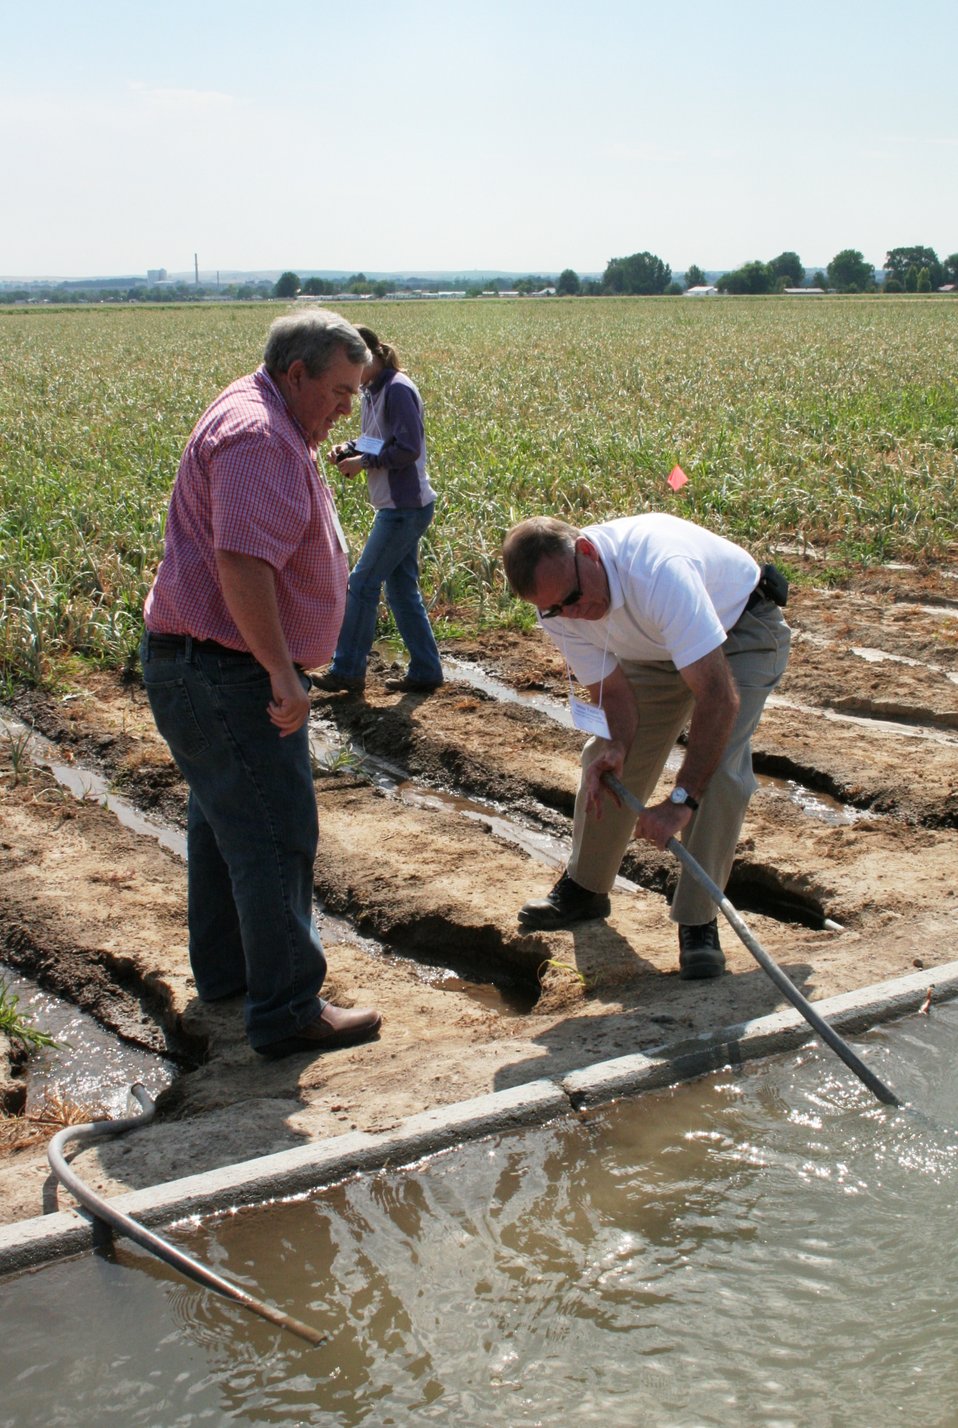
On the Road with Mike Taylor

Farmer Paul Skeen (left), president of the Malheur County Onion Growers in Oregon, shows FDA Deputy Commissioner Michael Taylor how water is siphoned from the canal for furrow irrigation of bulb onions. Mike and colleagues started a five-day tour of the Pacific Northwest on Sunday, Aug. 11, 2013 -- visiting Idaho, Oregon and Washington -- to get a first-hand look at produce production and irrigation operations, and to discuss the proposed Produce Safety Rule with growers, food industry representatives and state officials. For more about Mike's multi-region tour, read these FDA Voice blog posts:

• Hearing the Concerns of Maine Growers Striving for Agricultural Diversity
• On the Road with Mike Taylor: Touring the Pacific Northwest
• On the Road with Mike Taylor, Day 2: Frank Talk in Farm Country
• On the Road with Mike Taylor, Day 3: Families and Partnerships
• On the Road with Mike Taylor, Day 4: Looking to the Future